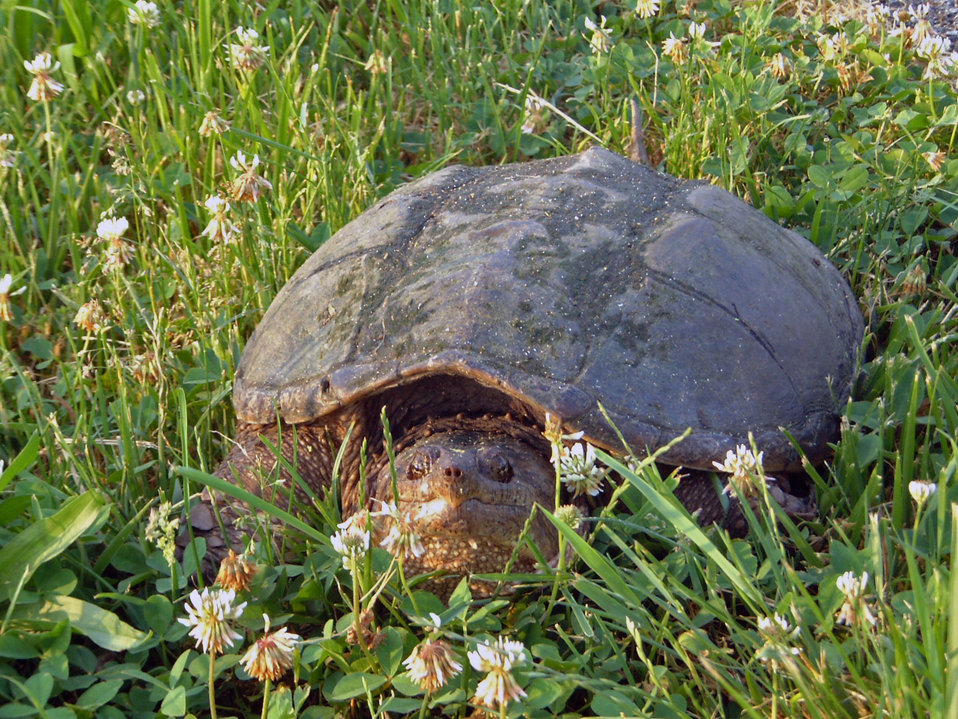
Snapping turtle at Prime Hook National Wildlife Refuge.